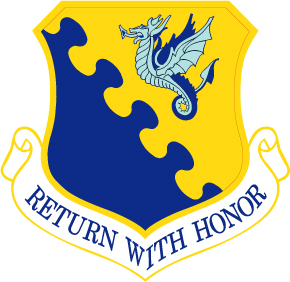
31st Fighter Wing shield